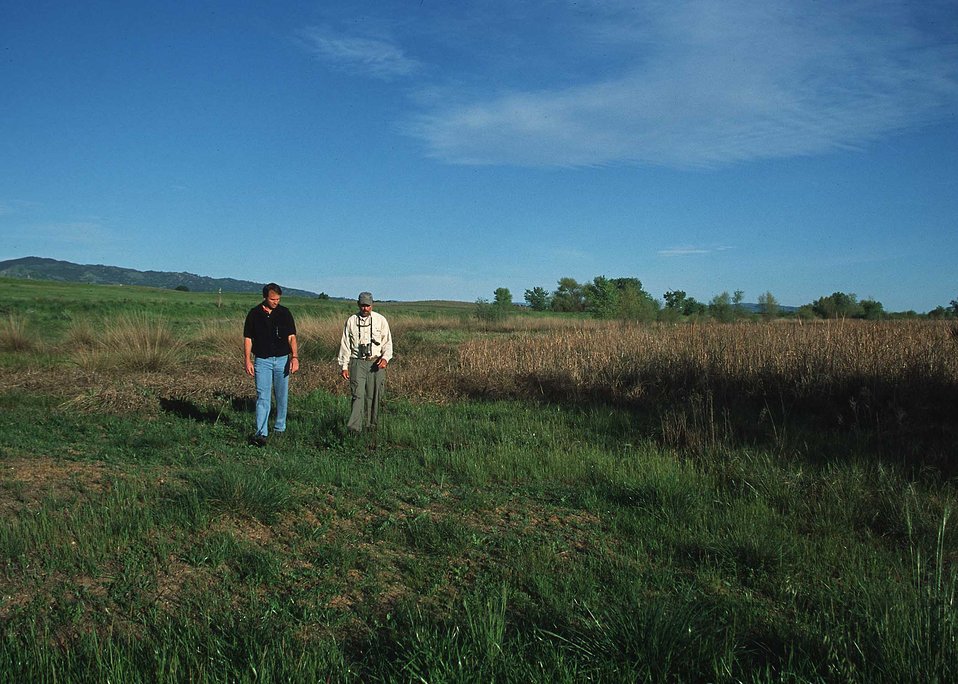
NRCS conservationist discusses wildlife habitat area with Yolo County farmer.